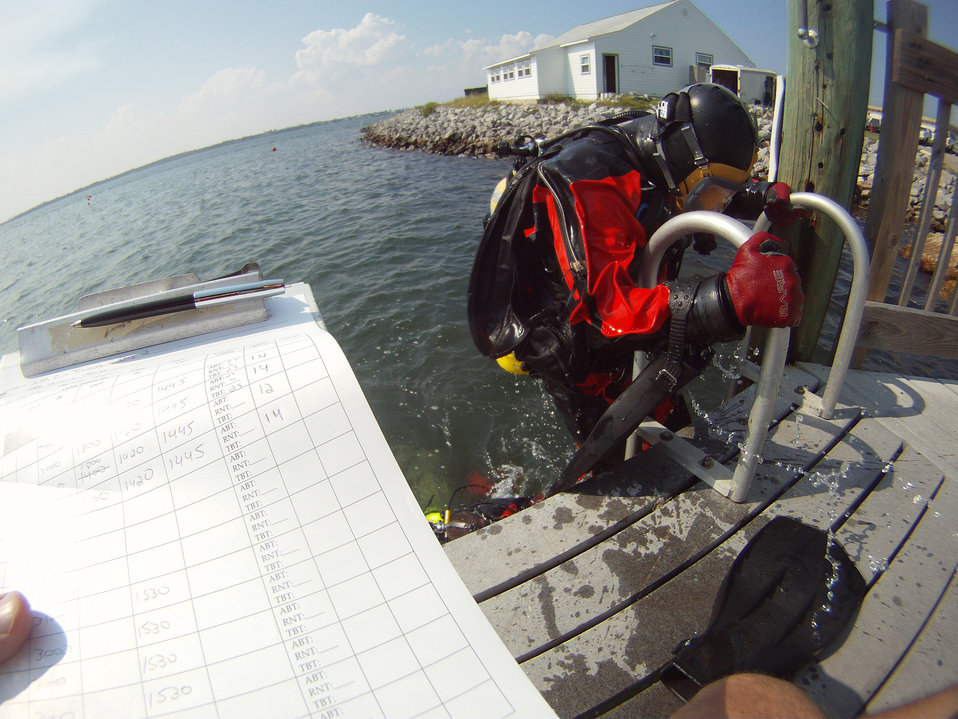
May 2012, EPA Dive Training

At this dive training in Gulf Breeze, Florida, divers learn basics of safety and rescue, as well as practice projects using the scientific method underwater in various diving modes including SCUBA, tethered SCUBA, and surface supplied air.